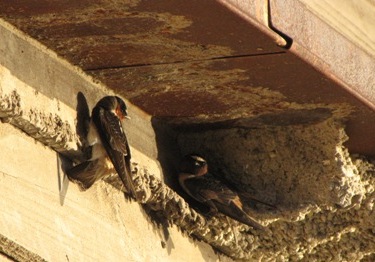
Mud, Spit and Work

Cliff swallows have returned to the Bear River Migratory Refuge and are constructing their amazing adobe homes along the Wildlife Education Center.